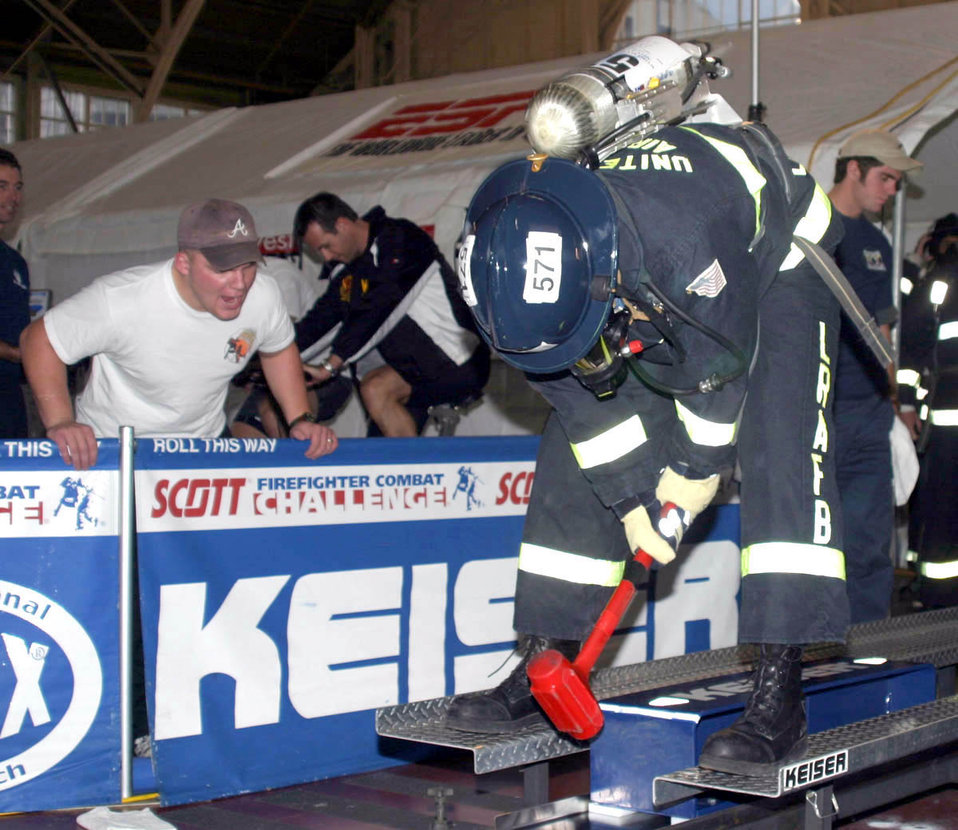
Putting out fires is Ottawa

OTTAWA -- Senior Airman Andy Kelley uses a 9-pound mallet to drive a 160-pound beam five feet in the chopping simulator during the 12th Annual World Firefighter Combat Challenge here. Airman 1st Class Michael Hodak cheers him on during the individual portion of the competition. More than 100 firefighter teams competed in the five-day test of strength, endurance and speed which ended Nov. 8. Both airmen are from Little Rock Air Force Base, Ark.